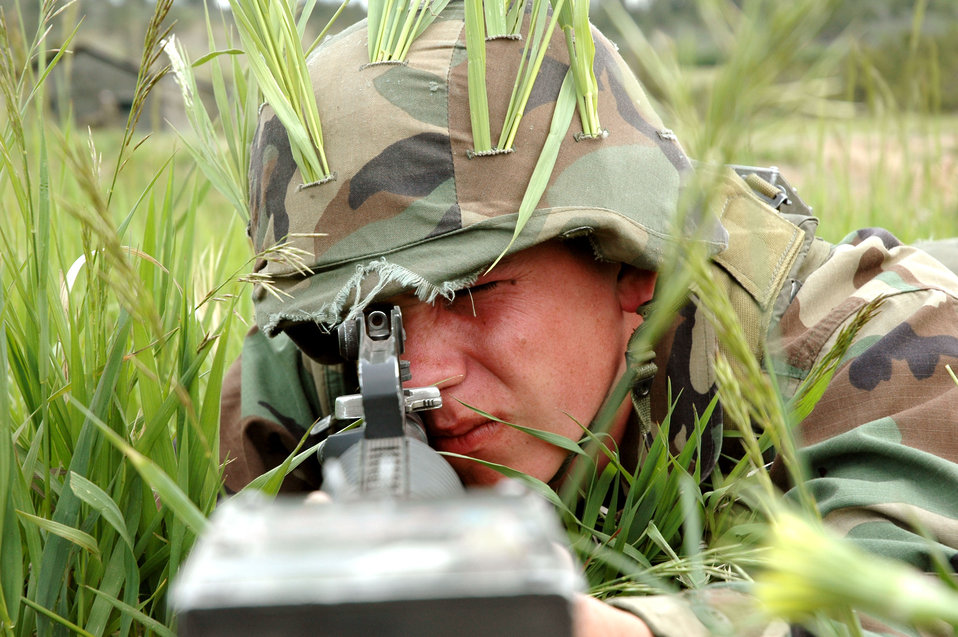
Cadets learn it's a BEAR out there

U.S. AIR FORCE ACADEMY, Colo. -- Cadet 3rd Class Nathan Haney looks for movement in the surrounding area to ensure camp security June 10 during Global Engagement 2005. Defensive fighting positions were manned to combat against cadre when they tested the cadets training, trying to infiltrate the camp and take over during war day. This was the first of six groups of cadets to go through the training throughout the summer.